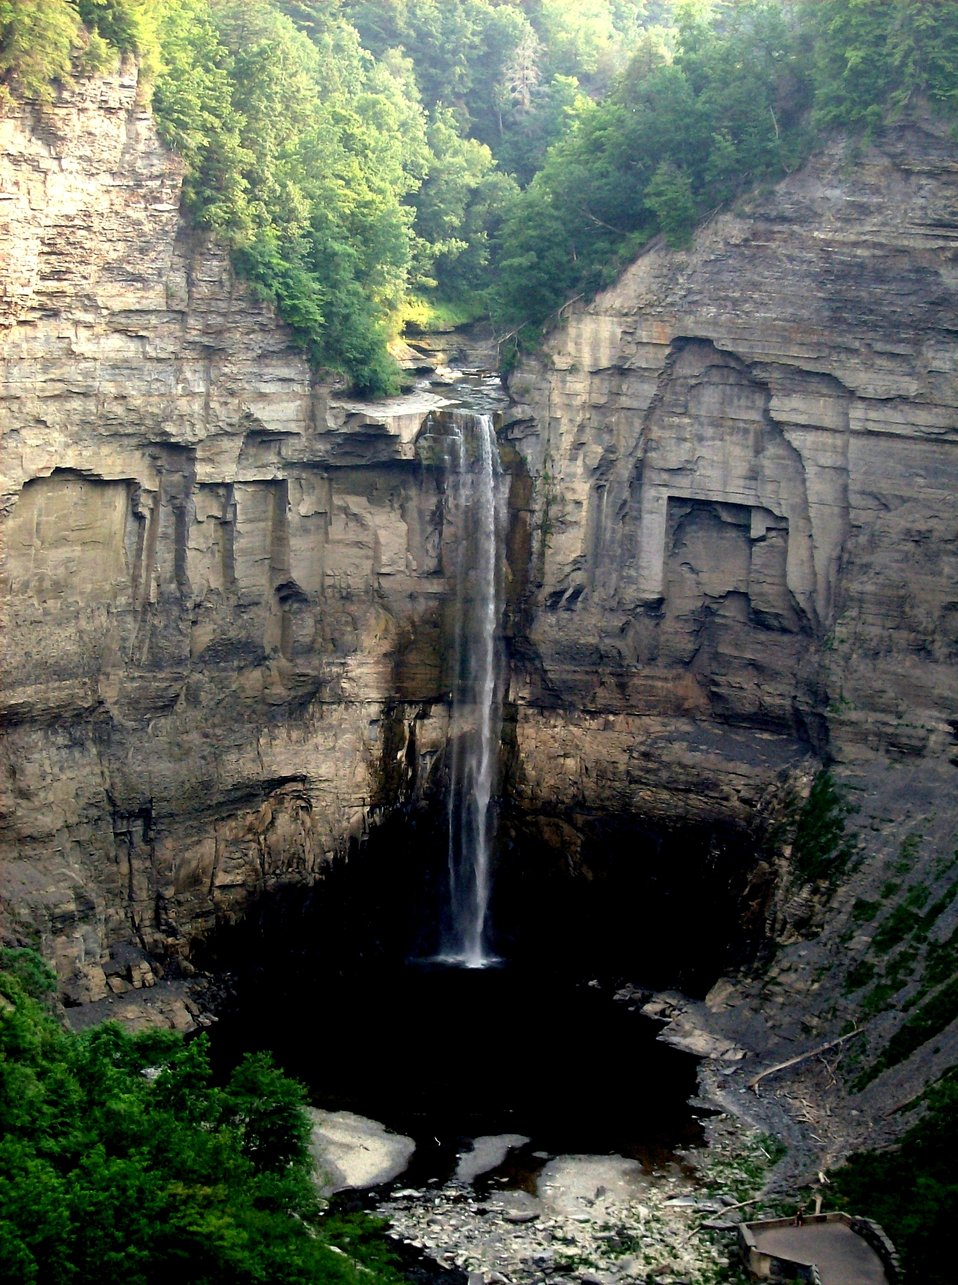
A magnificent waterfall dropping over shale cliffs into a circular pool below